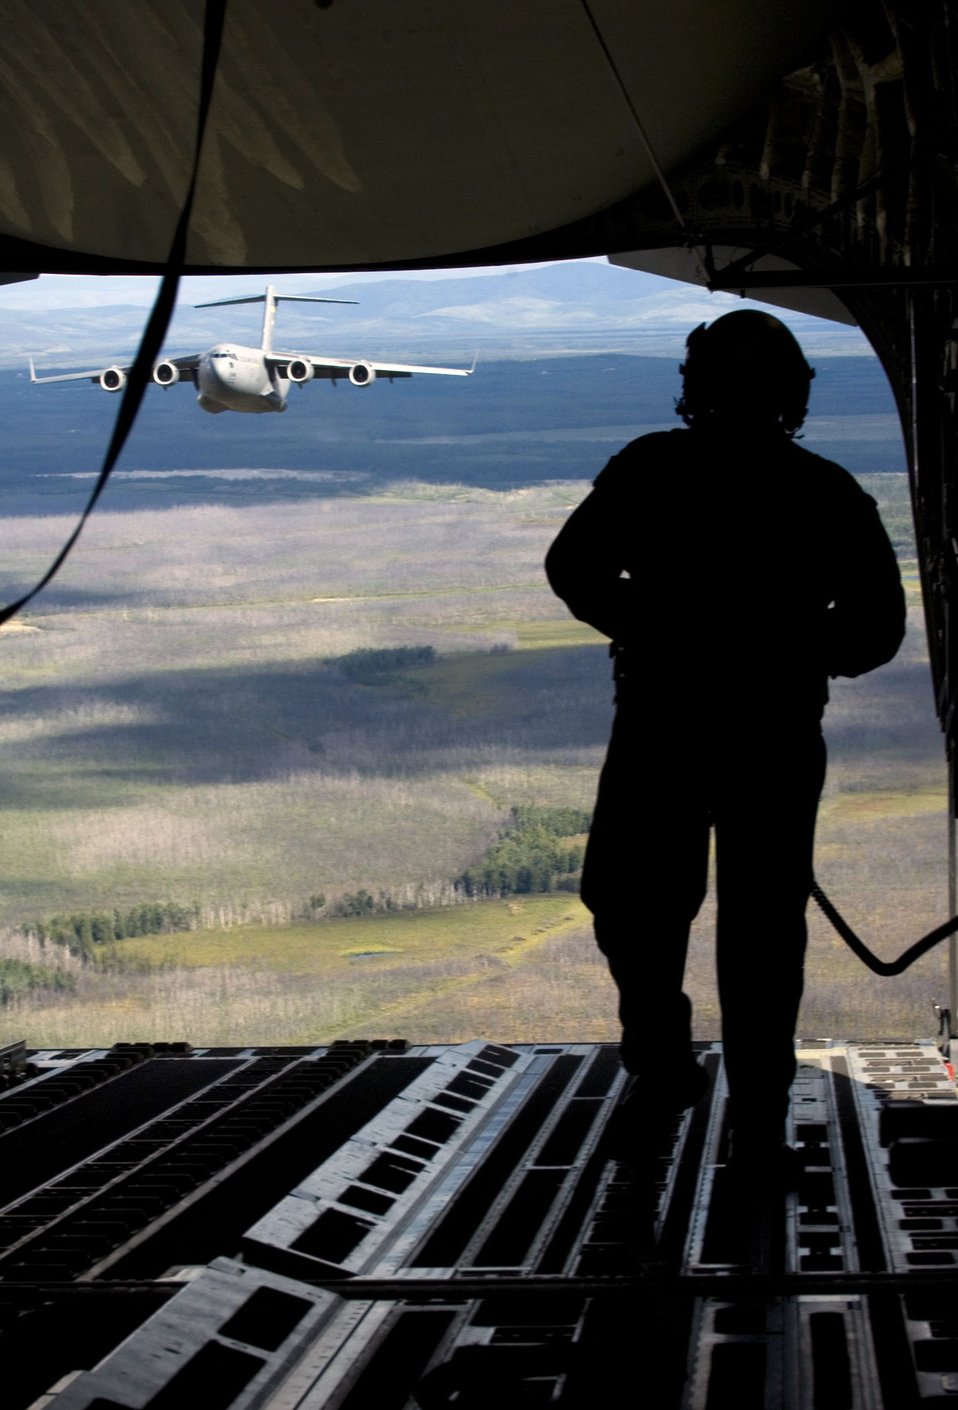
Elmendorf, coalition forces hone skills at Red Flag-Alaska

Staff Sgt. Justin Mulder prepares to drop cargo out the bay door of a C-17 Globemaster III during Red Flag-Alaska flight operations July 24 over an Alaskan training range. Sergeant Mulder is a loadmaster assigned to the 517th Airlift Squadron at Elmendorf Air Force Base, Alaska. More than 80 aircraft and 1,500 servicemembers from the six countries are flying together in this multinational exercise that provides realistic combat training in a safe and controlled setting over the Pacific Alaskan Range Complex and Eielson AFB, Alaska.